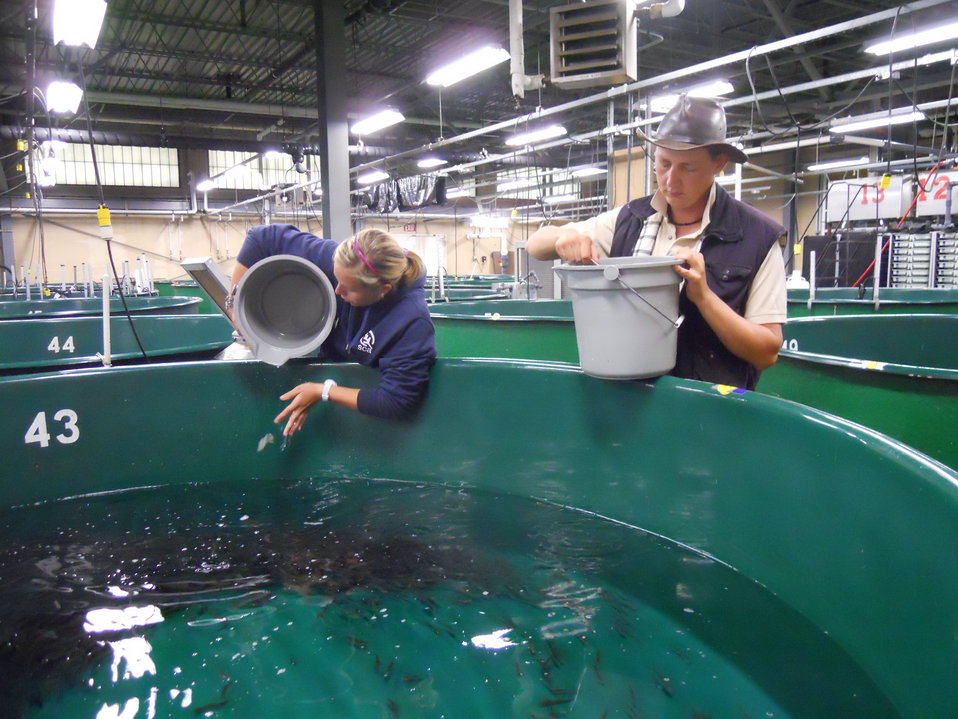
Lake trout sampling at White River National Fish Hatchery.